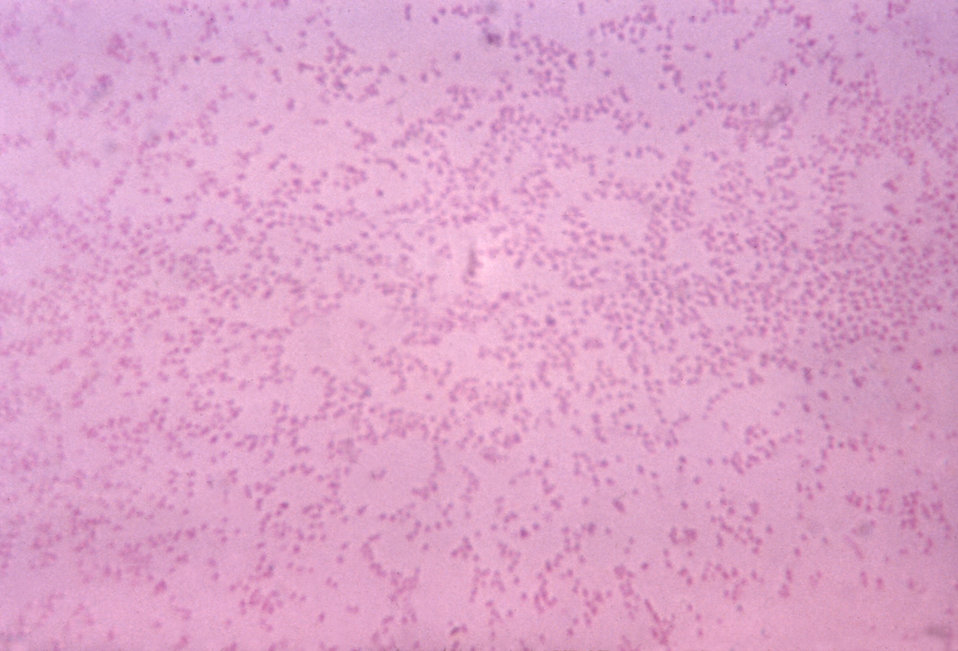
This micrograph depicts Pasteurella multocida, using a Gram-stain technique; Magnification: 1125X.